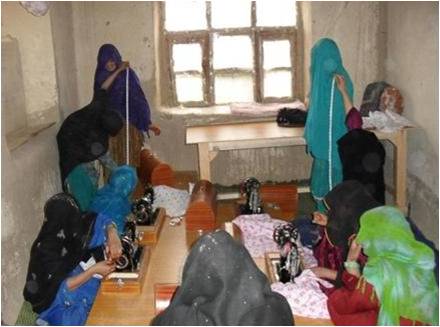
Tailoring Training for Vulnerable Populations